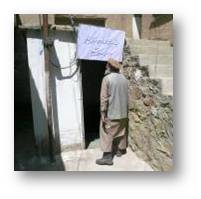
Communities Bank on New Financial Institution